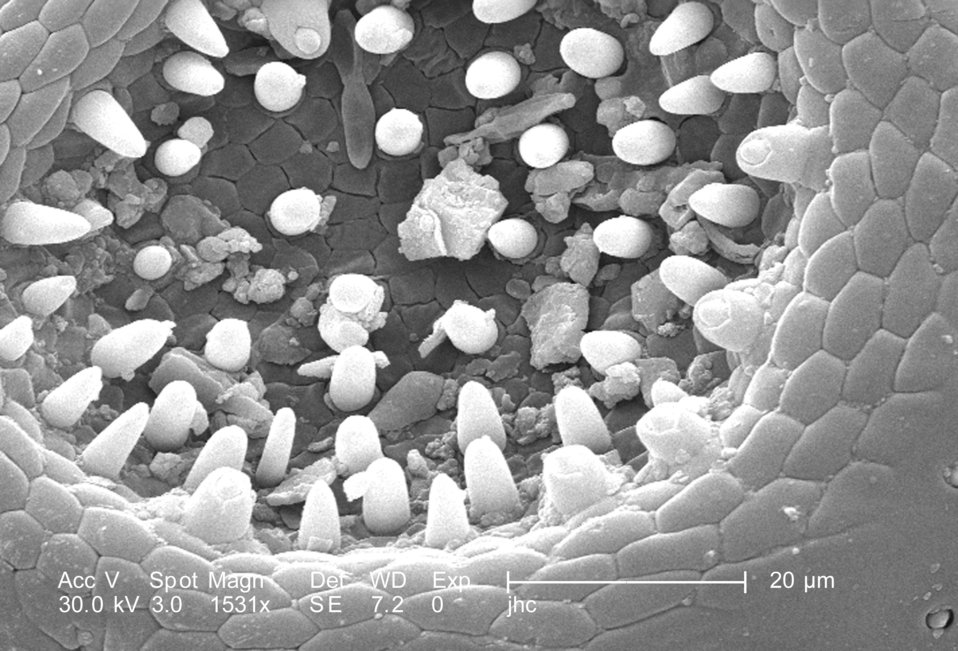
At a magnification twice that of PHIL 9933, 1531X, this scanning electron micrograph (SEM) revealed even more of the morphologic details found at the tip of this adult 'figeater' beetle's, Cotinis mutabilis, maxillary 'galea', which due to its shape, was given this Latin name for 'helmet'. The galea is located just medial to another, more prominent maxillary appendage, the palpus. Note the concave configuration at the distal tip of the galea, and how there are numerous pointed protuberances inside this concavity, which are most probably sensorial in nature. See PHIL 9932 and 9933, for additional views of this structure at lower magnifications, and therefore, more of its overall configuration.